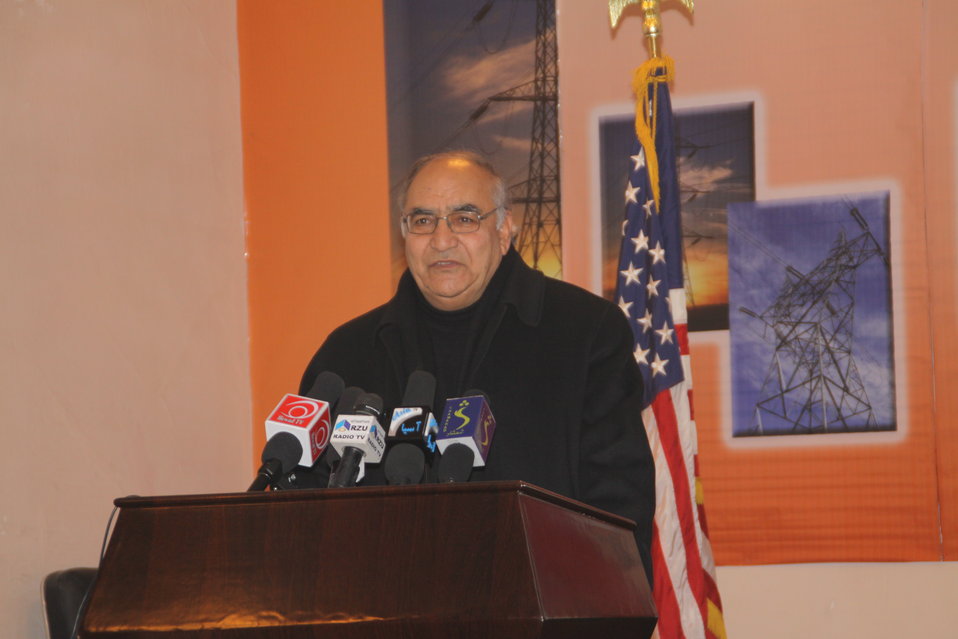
Dr. Shams